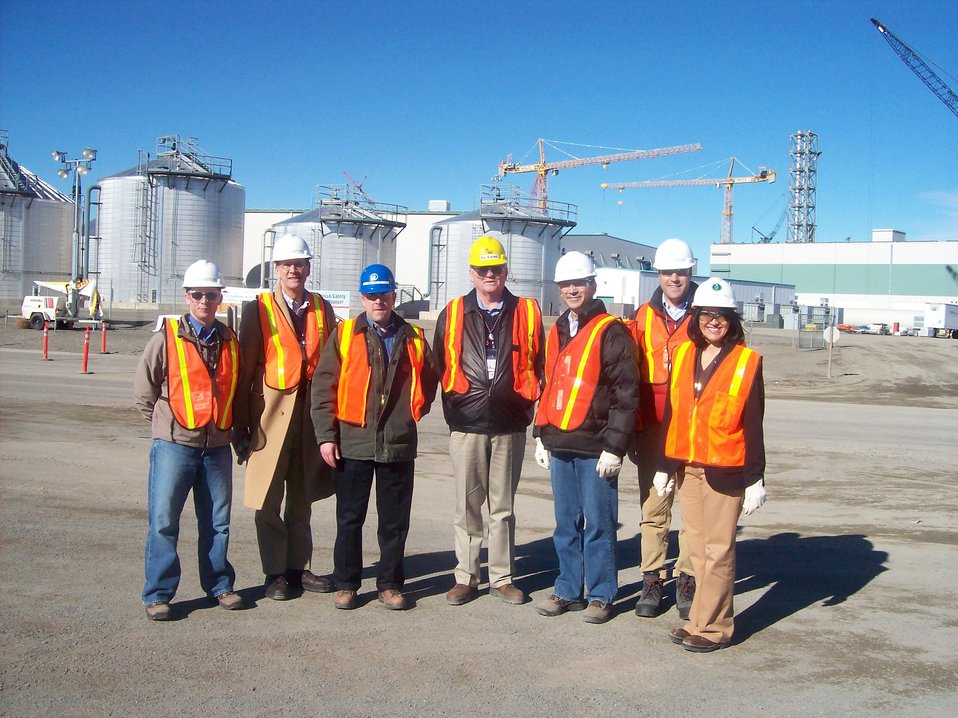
Albright group photo with tanks and cranes